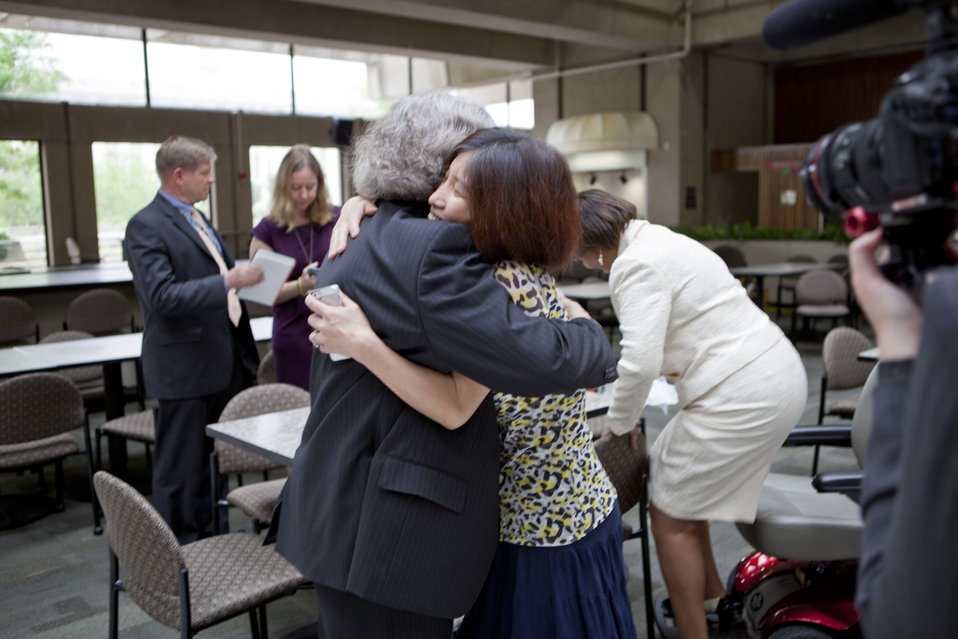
Secretary Moniz Meets DOE Employees

After the ceremony, attending members of the Department of Energy community were able to meet Secretary Moniz. Many friends and colleagues welcomed him back to the Department of Energy.